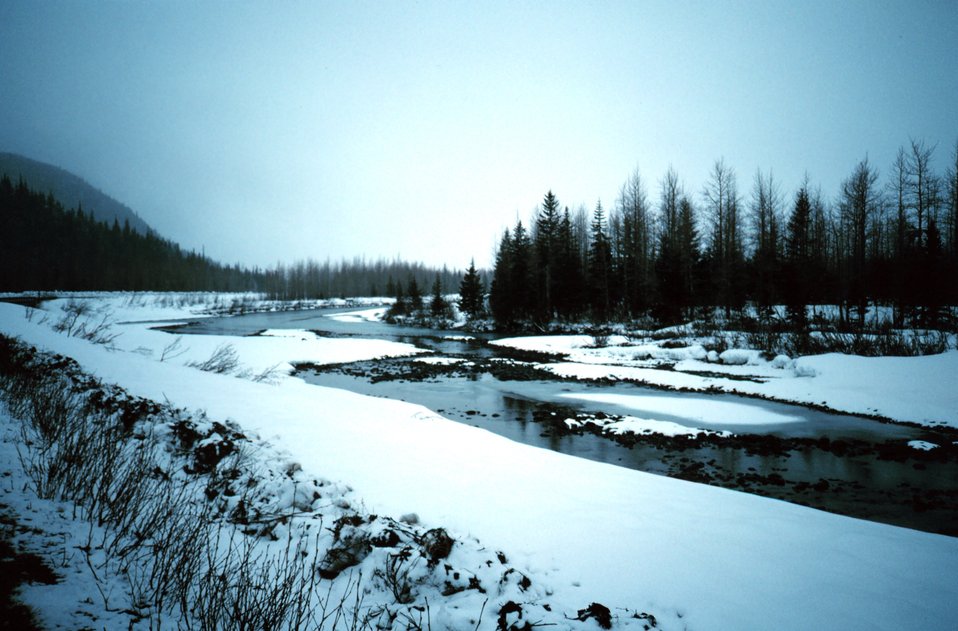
A scene along the Seward Highway